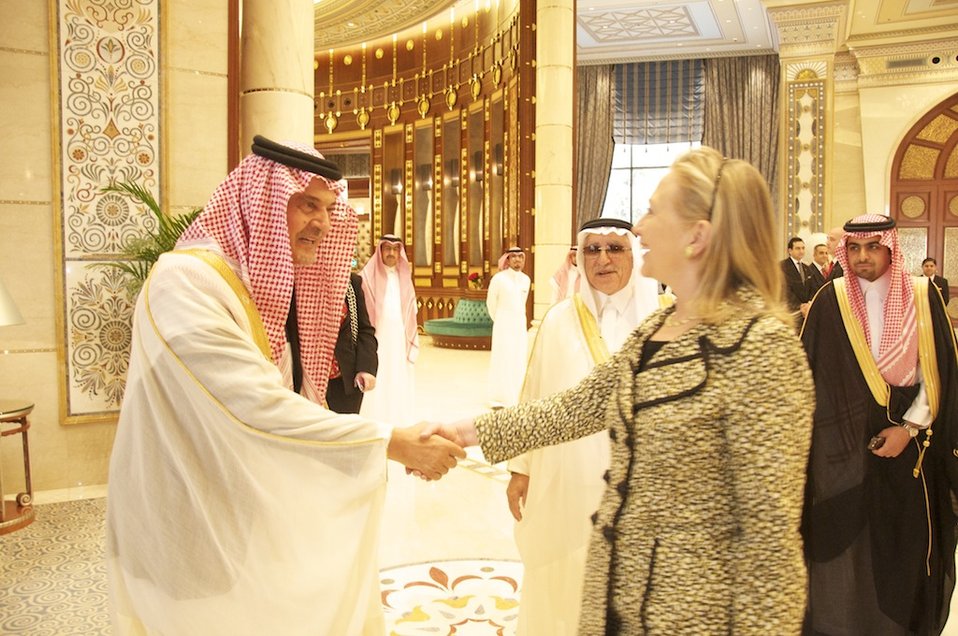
Secretary Clinton Is Greeted By Saudi Foreign Affairs Minister Prince Saud al-Faisal

U.S. Secretary of State Hillary Rodham Clinton is greeted by Foreign Affairs Minister Prince Saud al-Faisal of Saudi Arabia in Riyadh on March 30, 2012.